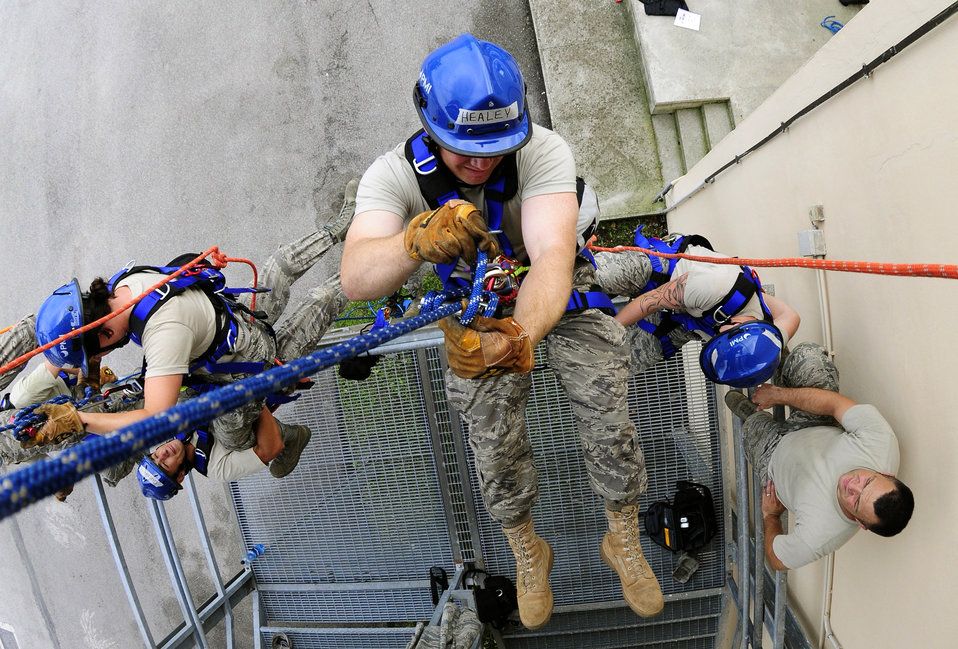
Hangin' ten

Tech. Sgt. John Healey, a 31st Civil Engineer firefighter at Aviano Air Base, Italy, rappels from a tower Aug. 26, 2010, during specialized rescue training. The 80-hour training course included classroom education and 73 hours of practical application including automobile extrication, technical rope and confined space rescues.